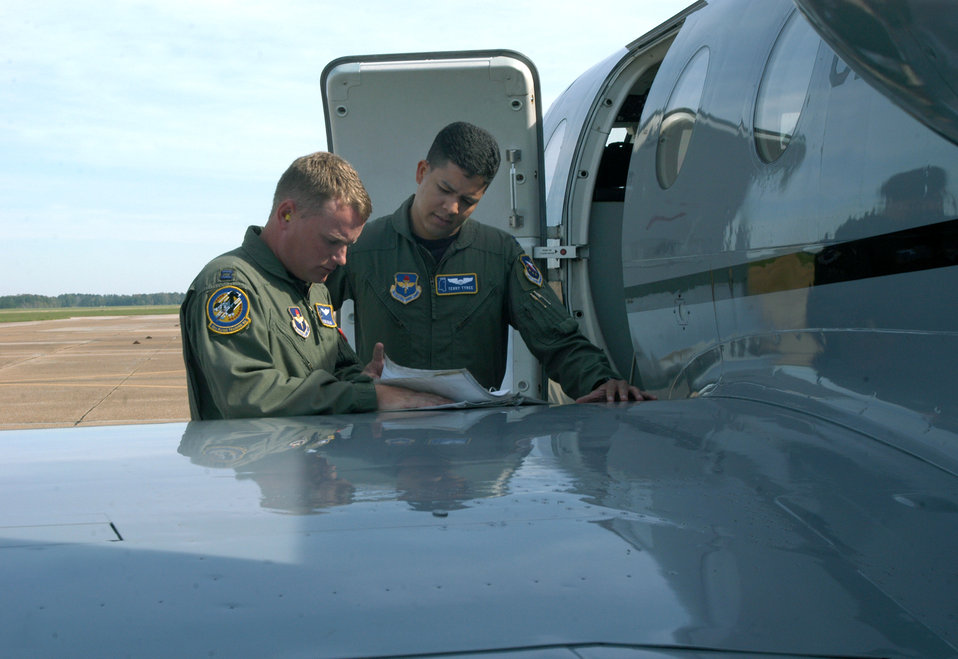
Airman achieves dream to fly 'into the wild blue yonder'

COLUMBUS AIR FORCE BASE, Miss. -- Capt. Stephen Miller (left) reviews aircraft maintenance records with Capt. Terry Tyree Jr. before a flight here. Captain Tyree earned his third aeronautical rating when he graduated from specialized undergraduate pilot training recently. He will learn to fly KC-10 Extenders at McGuire Air Force Base, N.J. Captain Miller was Captain Tyree's flight commander during pilot training. Captain Miller is assigned to the 48th Flying Training Squadron.